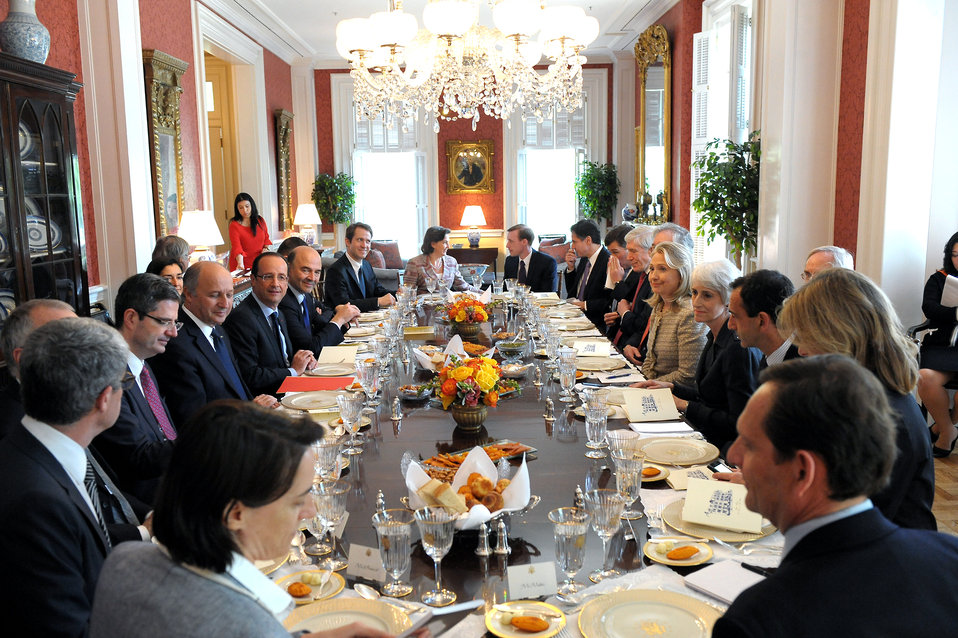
Secretary Clinton Hosts a Working Lunch for French President Hollande

U.S. Secretary of State Hillary Rodham Clinton hosts a working lunch for French President Francois Hollande at the Blair House in Washington, D.C. on May 18, 2012.